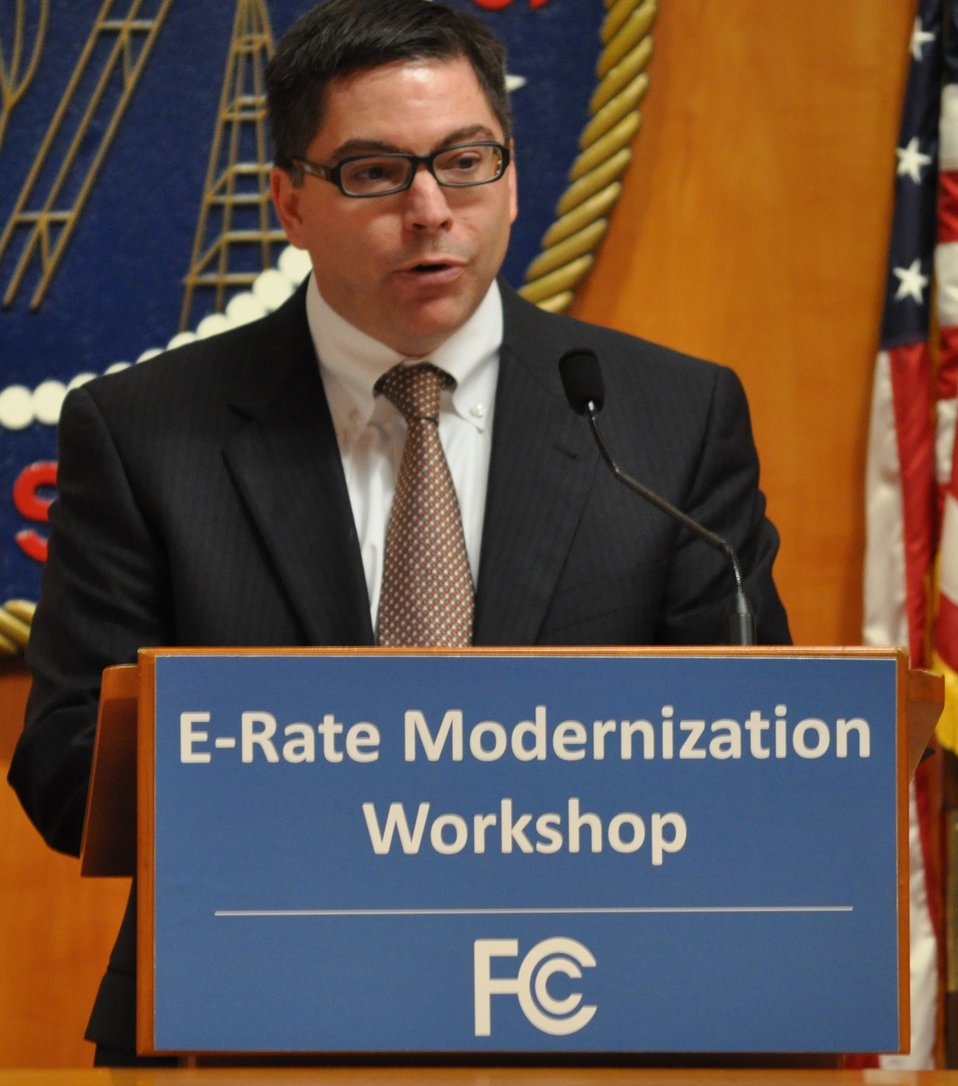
5.6.2014 E-Rate Modernization Workshop

Education and Library Technology Experts Roundtable: Enabling the Lowest “E-rate” for Schools and Libraries